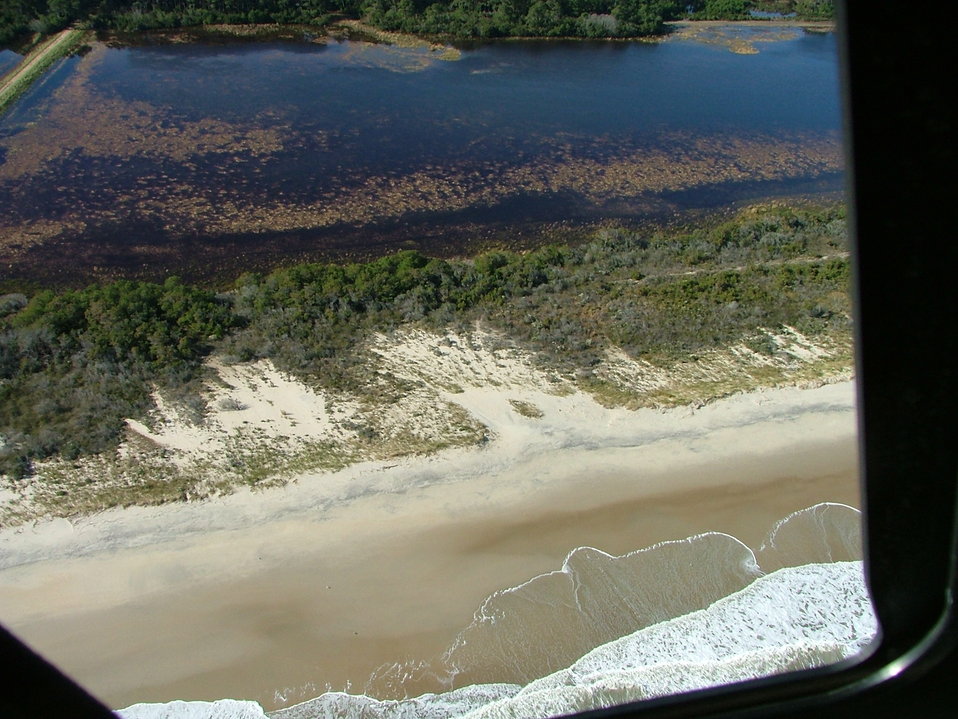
Chincoteague National Wildlife Refuge (VA)

The storm moved large volumes of sand.